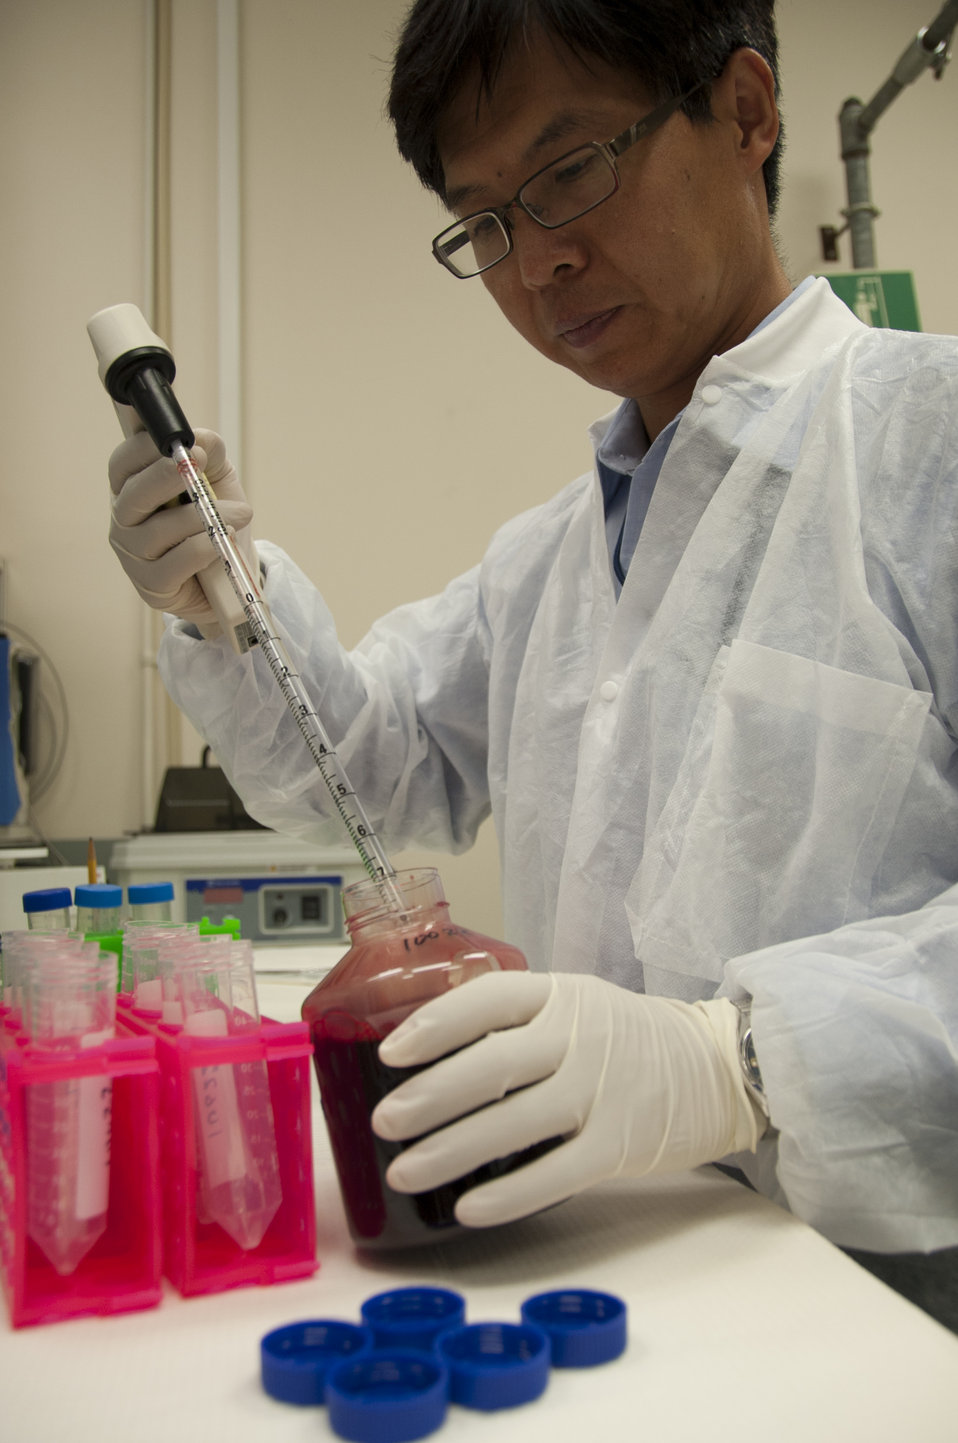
Blood Research: Saving Lives (8303)

Jason Liu, Ph.D., a laboratory chief at FDA’s Office of Blood Research and Review, transferring blood to 50 ml tubes as he prepares to isolate blood components. FDA is responsible for the safety of our nation’s blood supply and is at the forefront of evaluating and encouraging innovative technologies for protecting it.

Read this Consumer Update to learn more: Advances in Saving Lives with Blood